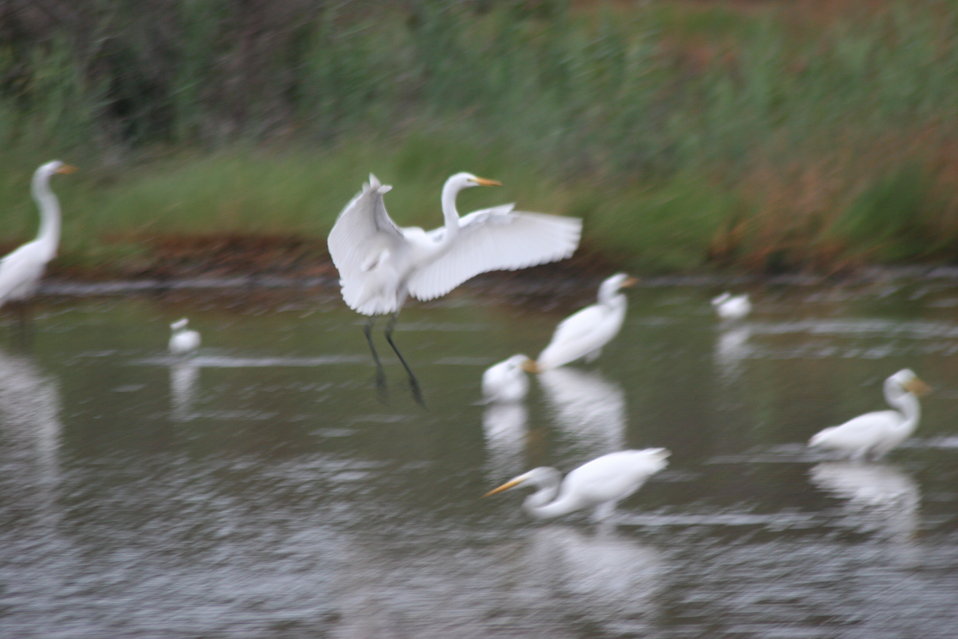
The Egret has Landed